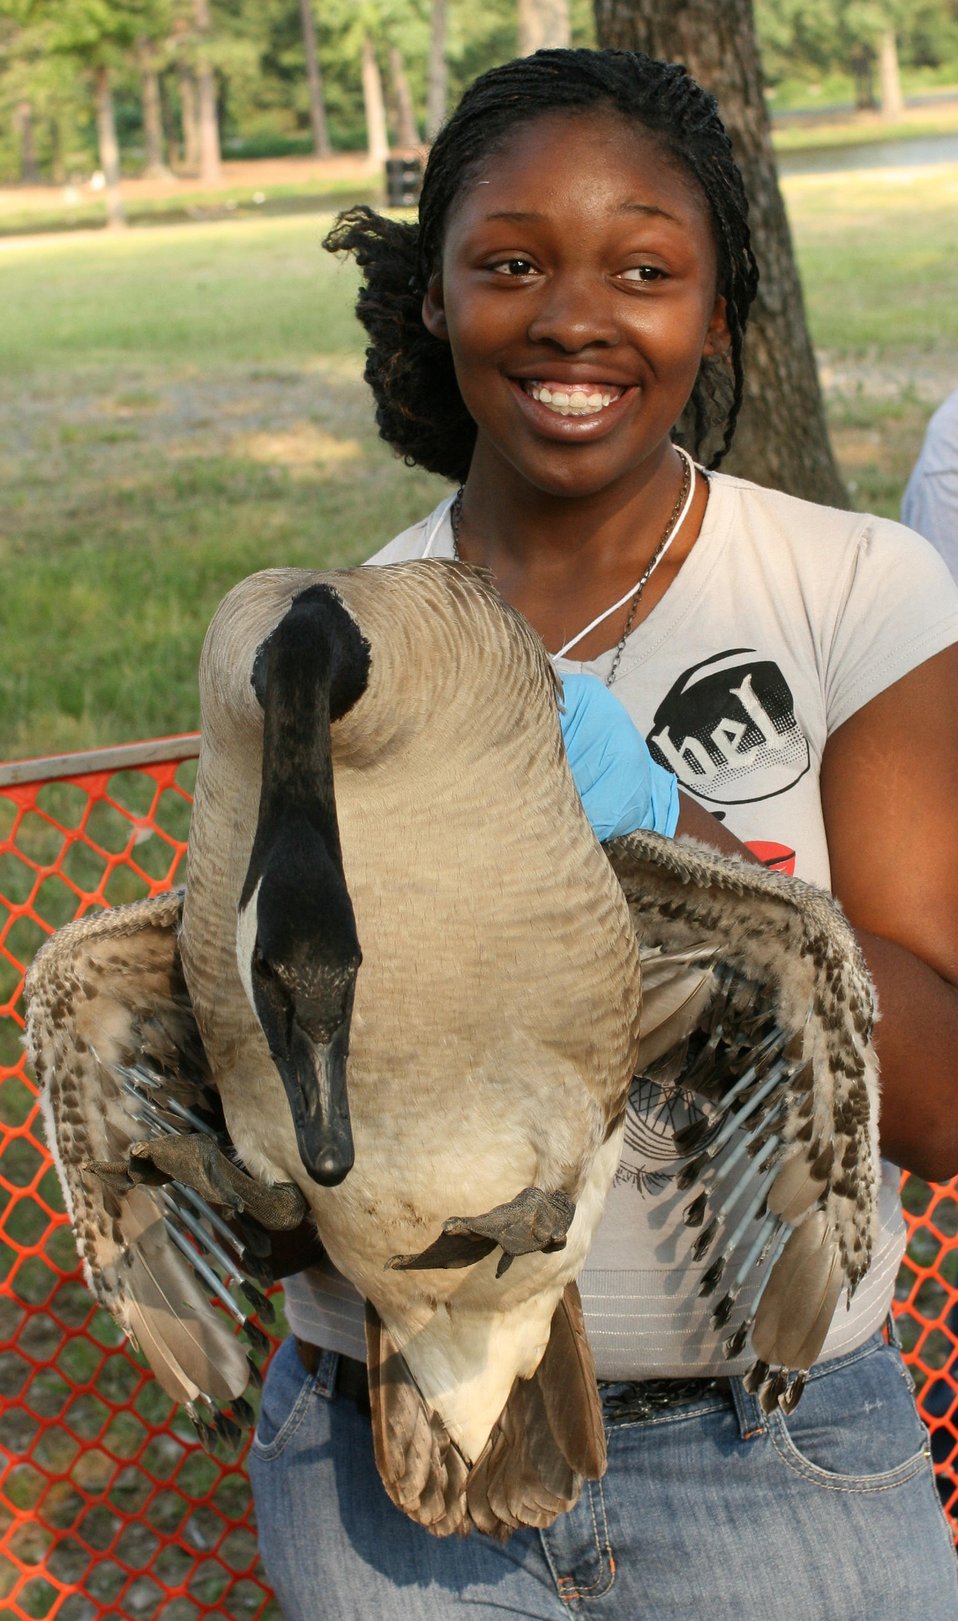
Students registered in the U.S. Department of Agriculture’s (USDA) Animal and Plant Health Inspection Service (APHIS) Ag-Discovery at the University of Arkansas Pine Bluffs, AR assist in capturing resident Canada Geese near the university in a session led by USDA’s Wildlife Services and personnel from the Arkansas Game and Fish Commission on July 30, 2012. The geese are corralled and students observe sample collection techniques for disease surveillance and assist in banding the birds before release.